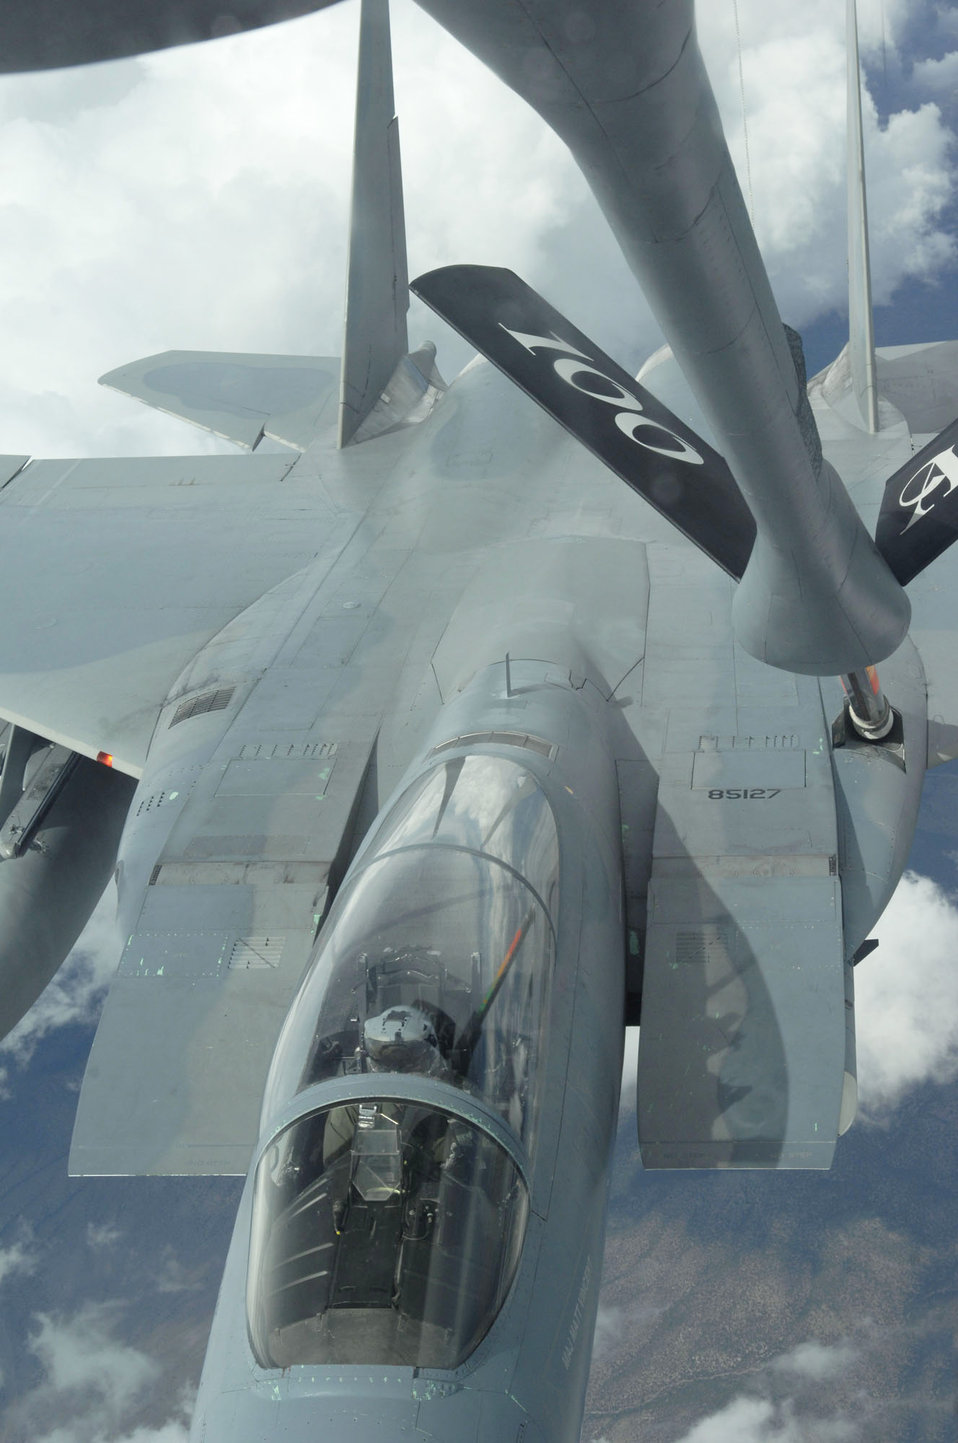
Keeping the Eagle in the sky

An F-15 Eagle takes fuel July 24 over the Nevada Test and Training Range during Red Flag. Red Flag is a realistic combat training exercise involving the air forces of the United States and its allies. The aircraft is from the 390th Fighter Squadron at Mountain Home Air Force Base, Idaho.